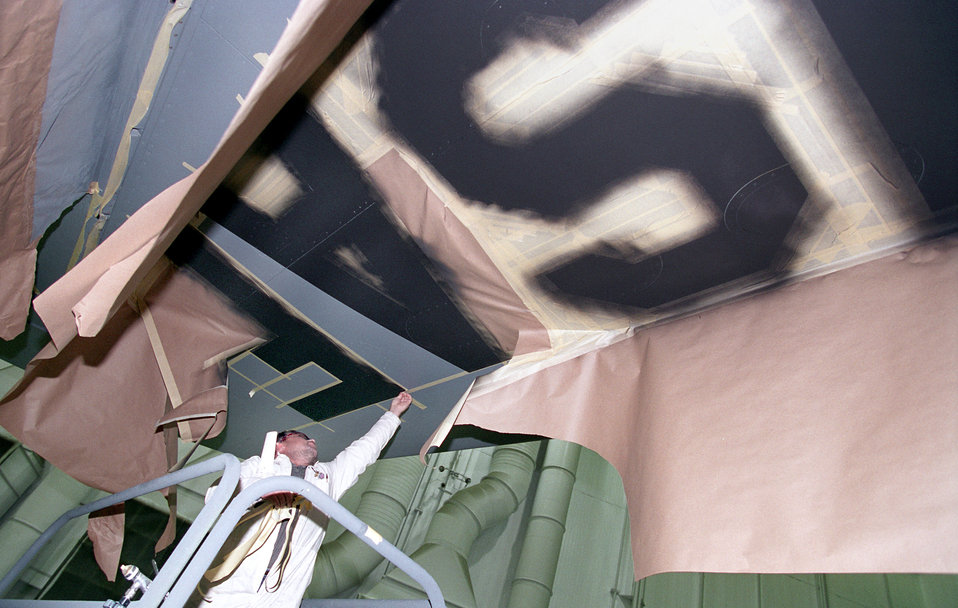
Painters produce picture-perfect planes

TINKER AIR FORCE BASE, Okla. -- After